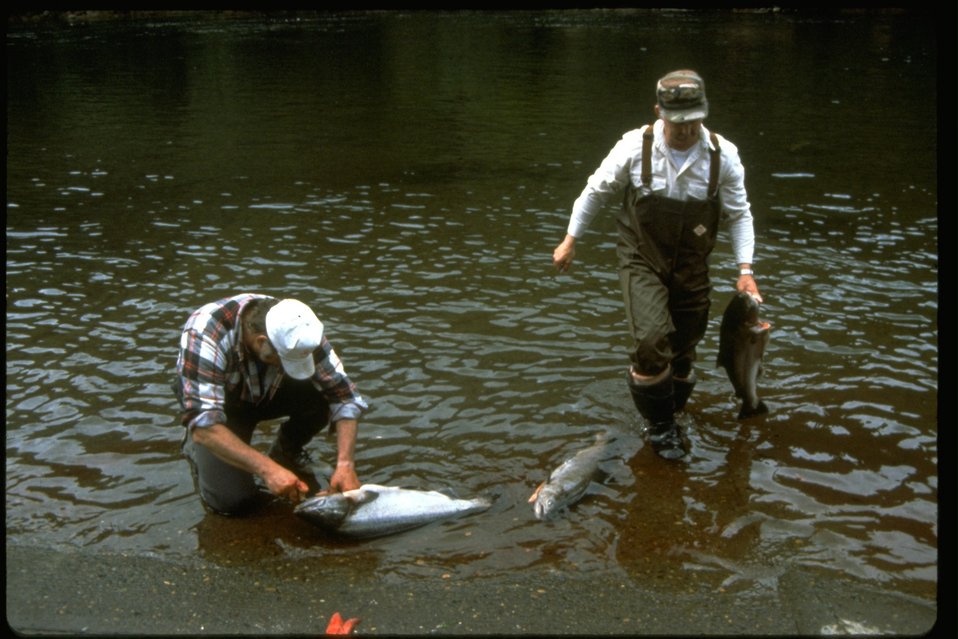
Fisherman in the Sandy River.